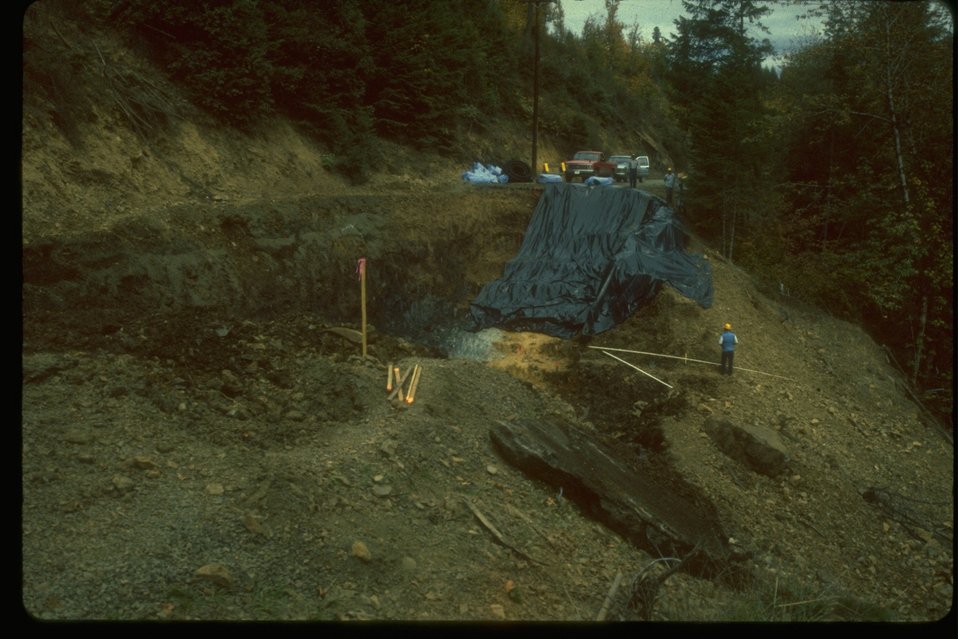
Road Maintenance.